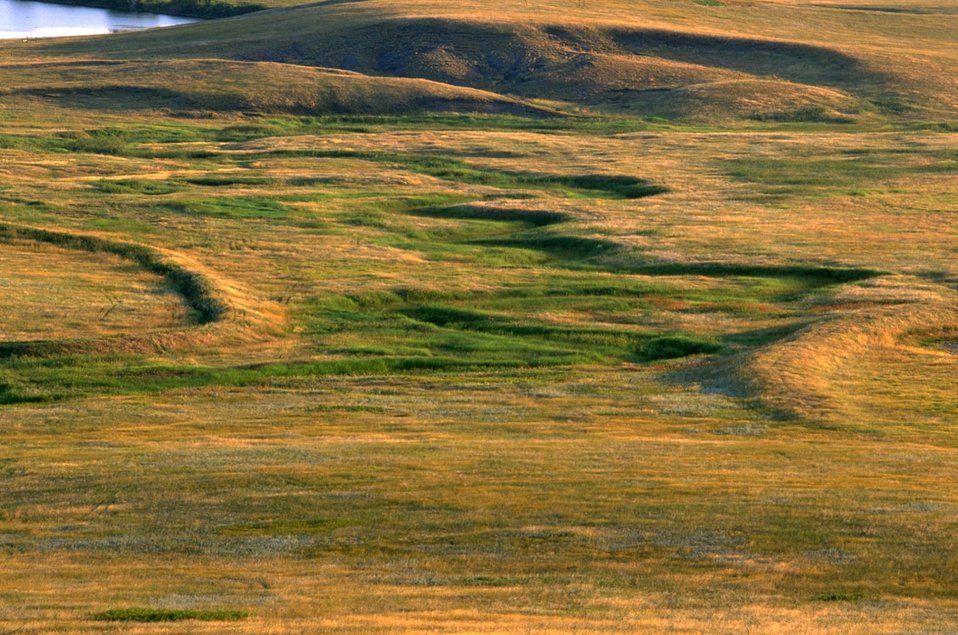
Fort Meade Dam Diversion at the north end of Fort Meade